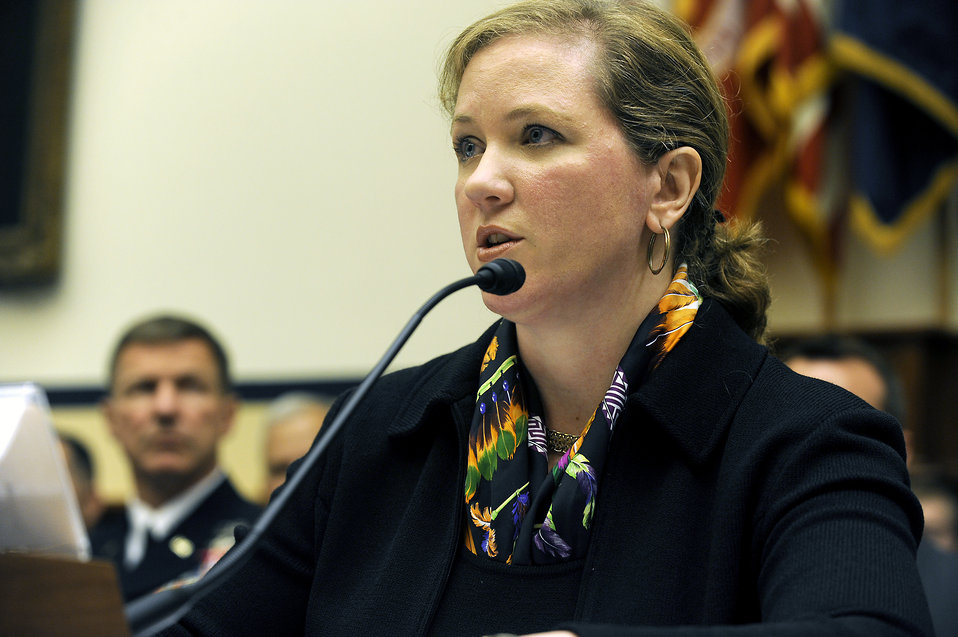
Air Force undersecretary testifies about efficiences before House committee

Undersecretary of the Air Force Erin C. Conaton testifies during a House Armed Services Committee discussion on